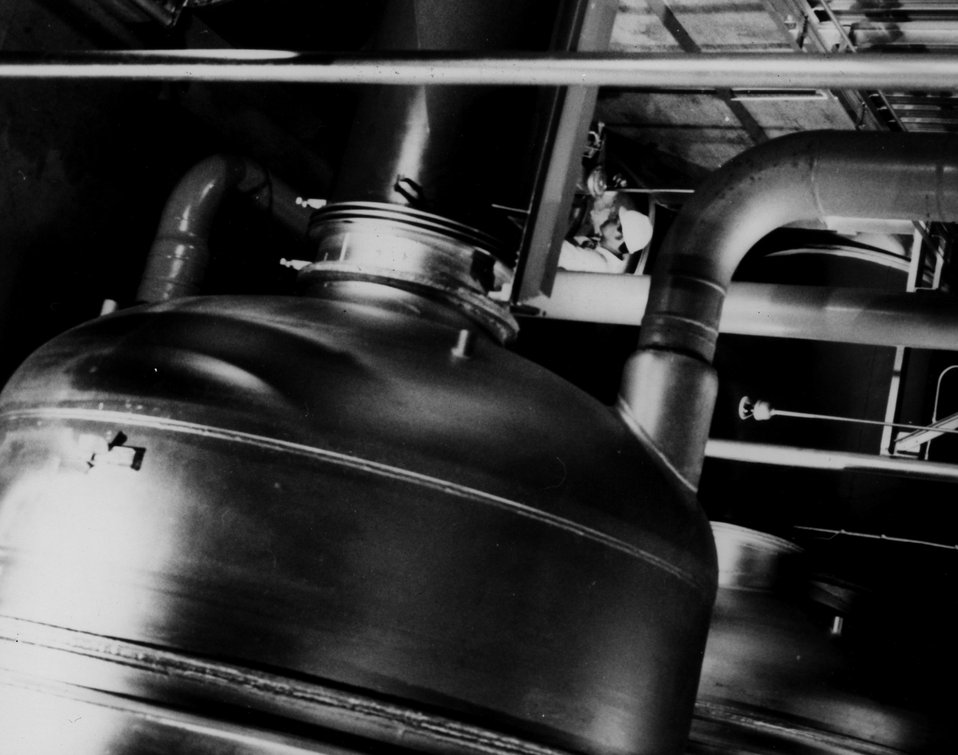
The gaseous diffusion process, which enriches uranium for use in atomic energy activities, is done at AEC-owned, contractor-operated plants in Kentucky, Ohio, and Tennessee. In the process, gaseous uranium hexafluoride (UF6) is put through a series of barriers, which partially separate the highly fissionable, lighter and faster-moving uranium-235 atoms from the heavier and slower-moving uranium-238 atoms that make up the bulk of the material. c. 1972